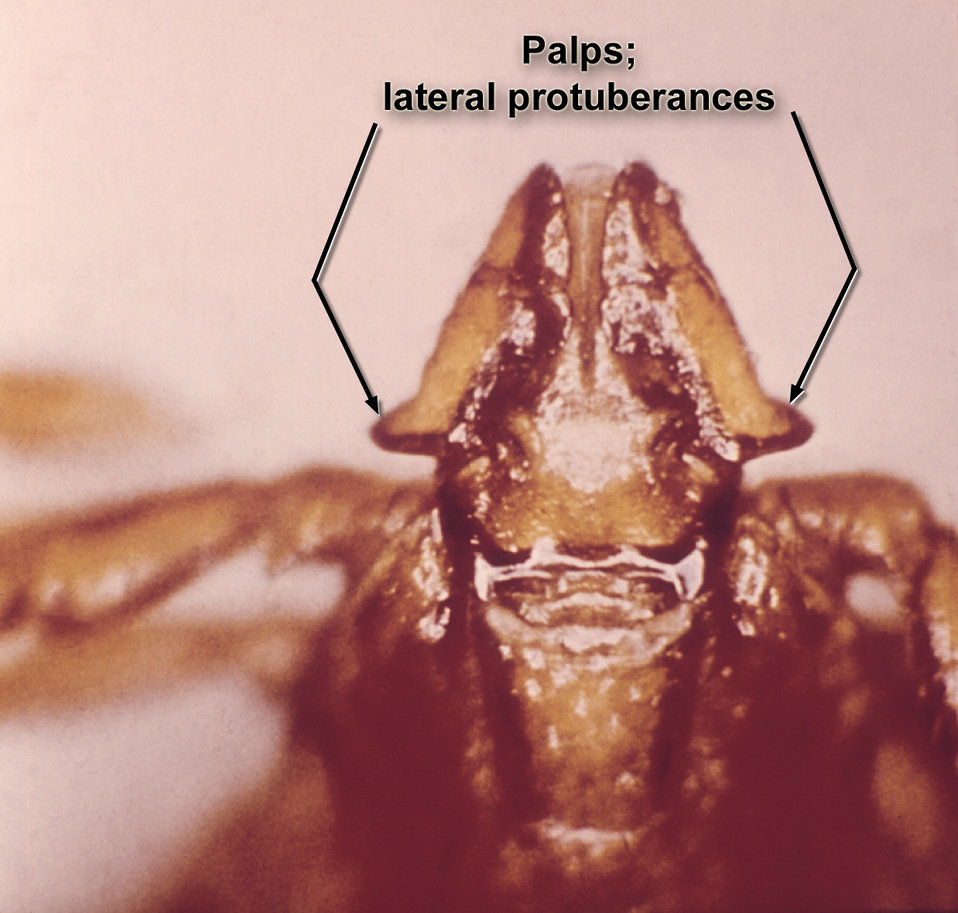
This member of the genus Haemaphysalis is identified by the lateral protrusion of its 2nd palpal segment.